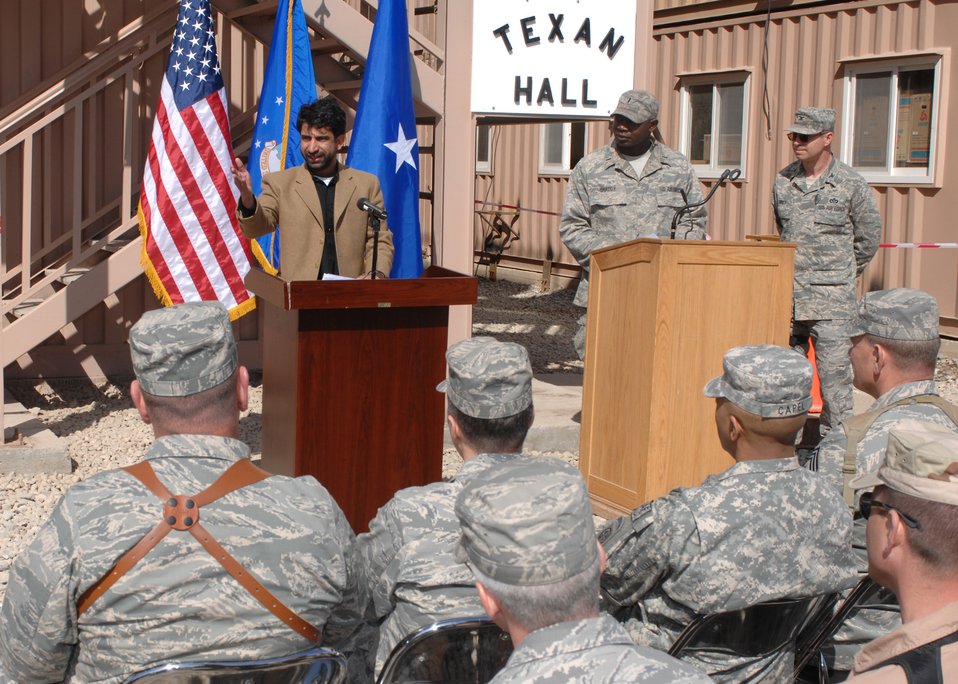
Bagram receives first relocatable dormitory

Obaid Dullah speaks to an audience during the official opening of the first of 14 dormitories Feb. 26 on Camp Cunningham at Bagram Air Base, Afghanistan. The building, named